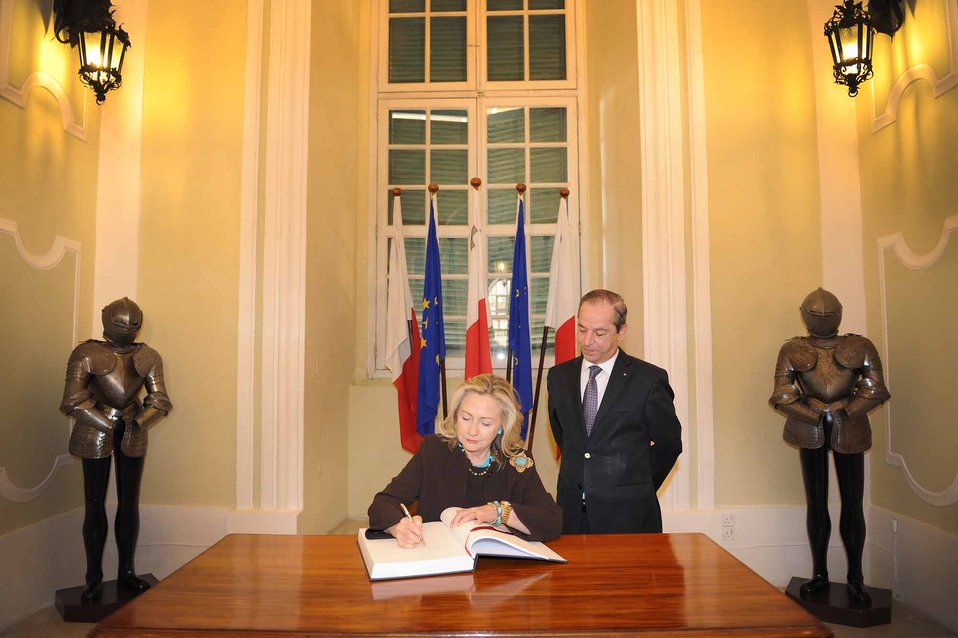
Secretary Clinton Signs the Visitors' Book

U.S. Secretary of State Hillary Rodham Clinton, with Maltese Prime Minister Lawrence Gonzi, signs the Visitors’ Book at the Auberge de Castille in Valletta, Malta, on October 18, 2011.